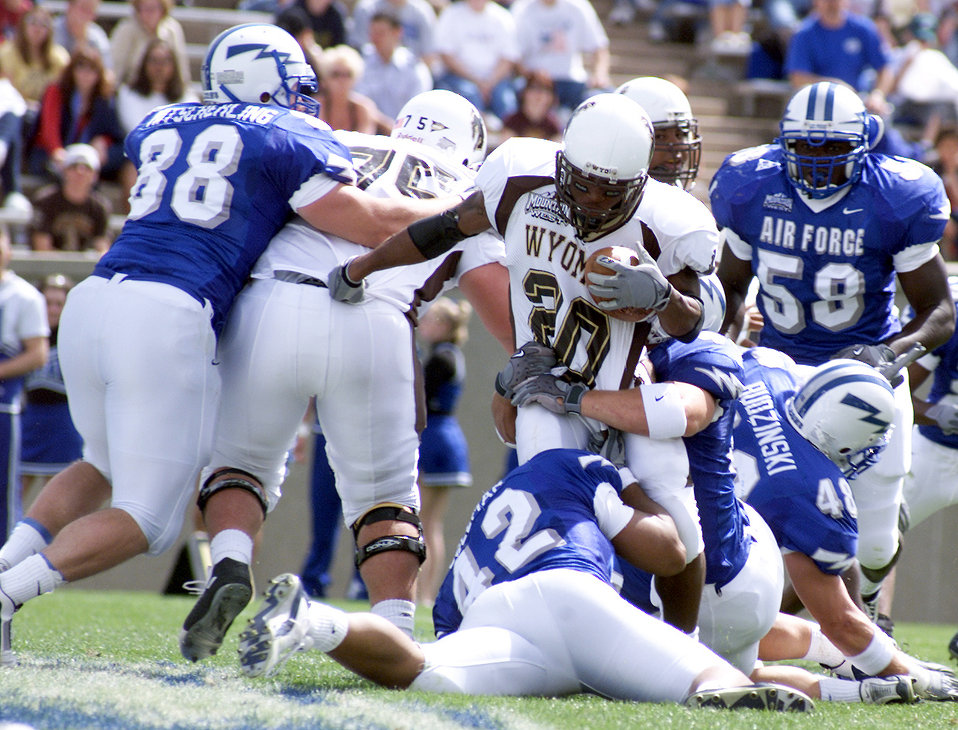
Stopped cold

U.S. AIR FORCE ACADEMY, Colo. (AFPN) -- Wyoming running back Ivan Harrison is dragged to the ground by Air Force defensive end Monty Coleman (No. 42) and linebacker Trevor Hightower. The Falcons defense held Wyoming to a mere 88 yards rushing during Air Force's 35-29 victory on Sept. 20. Air Force advanced to 4-0, and next faces Brigham Young University on Sept. 27.